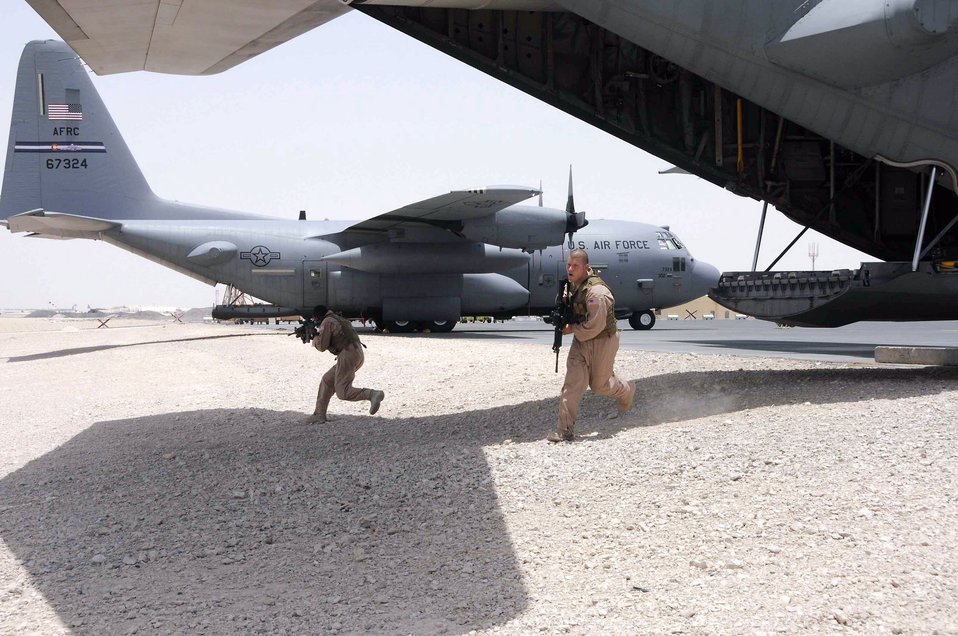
Get it done!

Staff Sgt. Nahteas Murphy (left) and Senior Airman David Mattox hustle out of a C-130 aircraft to post and secure a perimeter June 24. Sergeant Murphy and Airman Mattox belong to the 379th Expeditionary Security Forces Squadron's Fly Away Security Team.